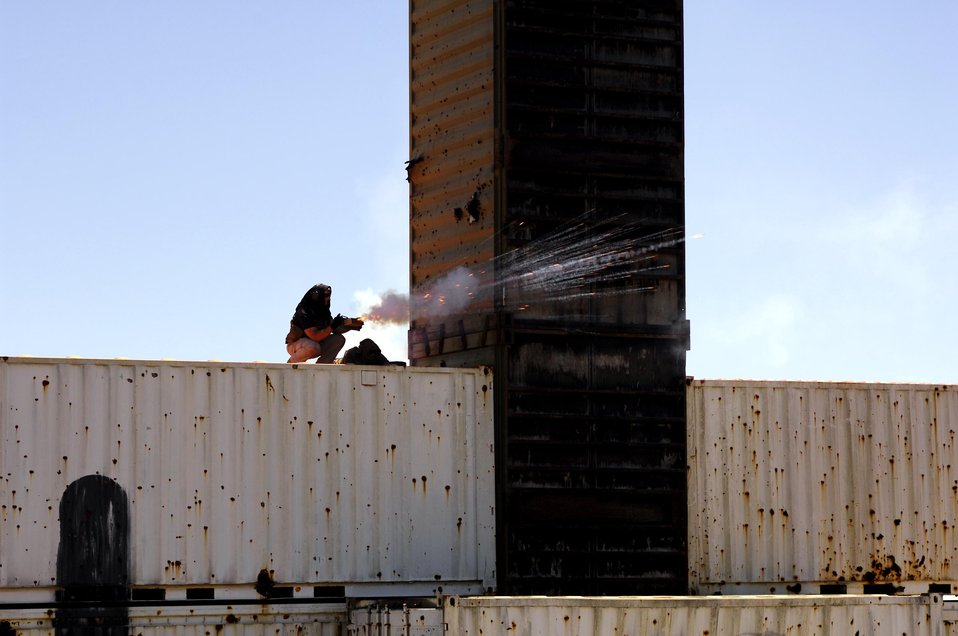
Air Force JTACs train colleagues for combat

Air Force members portraying opposition forces launch simulated artillery at a convoy April 17 during Atlantic Strike 5. Atlantic Strike is a joint forces training event involving joint terminal attack controllers from the Army, Air Force and Marines and is held semiannually at the Avon Park Air Ground Training Complex in Avon Park, Fla.